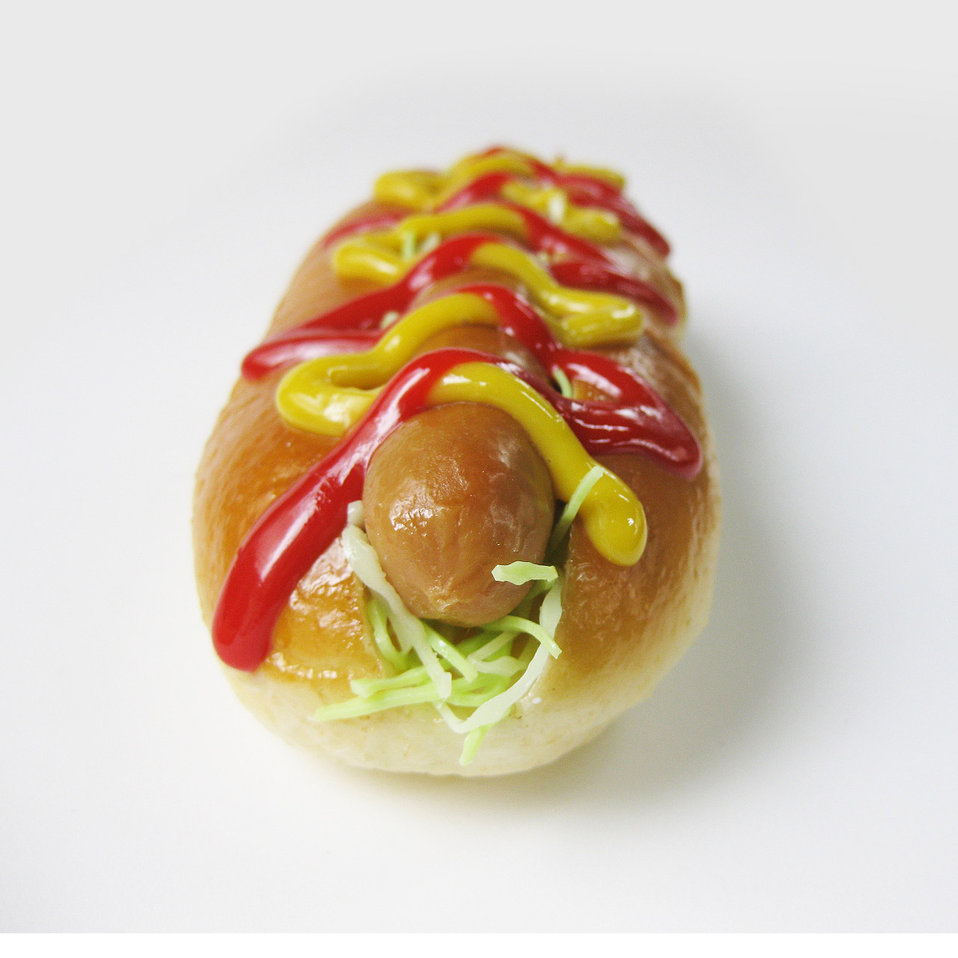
Hot dog with cabbage.